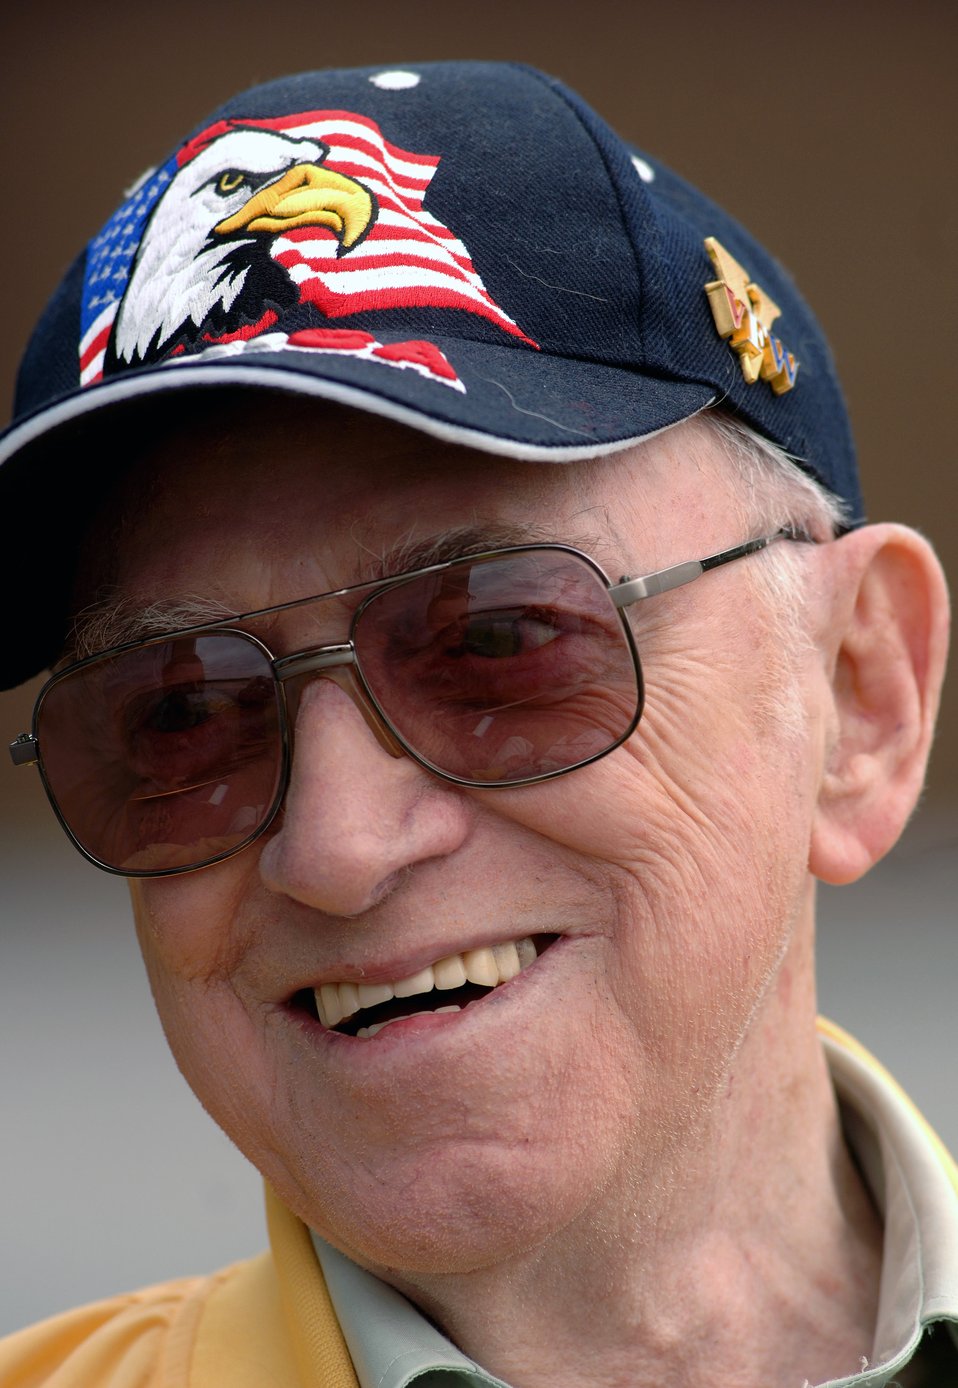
Army Air Corps veteran talks about war experience at air show

World War II veteran Robert McNally shares stories with media and spectators of his time spent as an aircraft radio operator in the Army Air Corps while aboard the B-25 Mitchell bomber Aug. 19 at Pease Air National Guard Base at Portsmouth, N.H. Mr. McNally, 81, was a guest attending the 2007 Wings of Hope Air Show with hopes of being reunited with old friends. The 2007 Wings of Hope Air Show at Pease ANGB is in conjunction with Air Force Week New England.